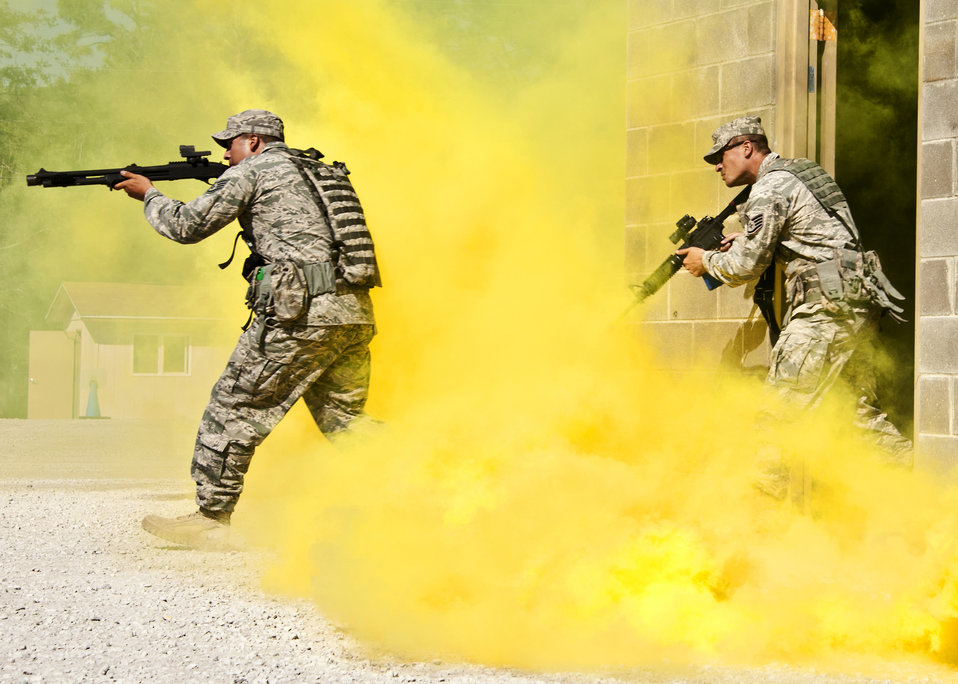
Brave Defender

Staff Sgt. Geovanii Pacheco leads his team out of a building as part of an assault demonstration for Chief Master Sgt. of the Air Force James A. Roy, May 6, 2011, at Eglin Air Force Base, Fla. Chief Roy received a hands-on tour of Air Force Materiel Command's